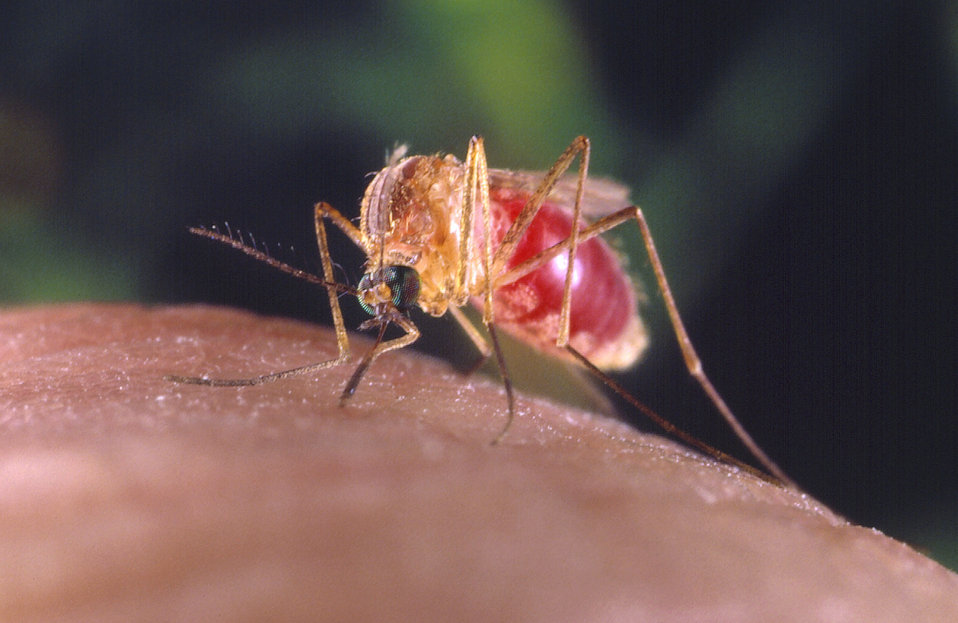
A Culex quinquefasciatus mosquito on a human finger.